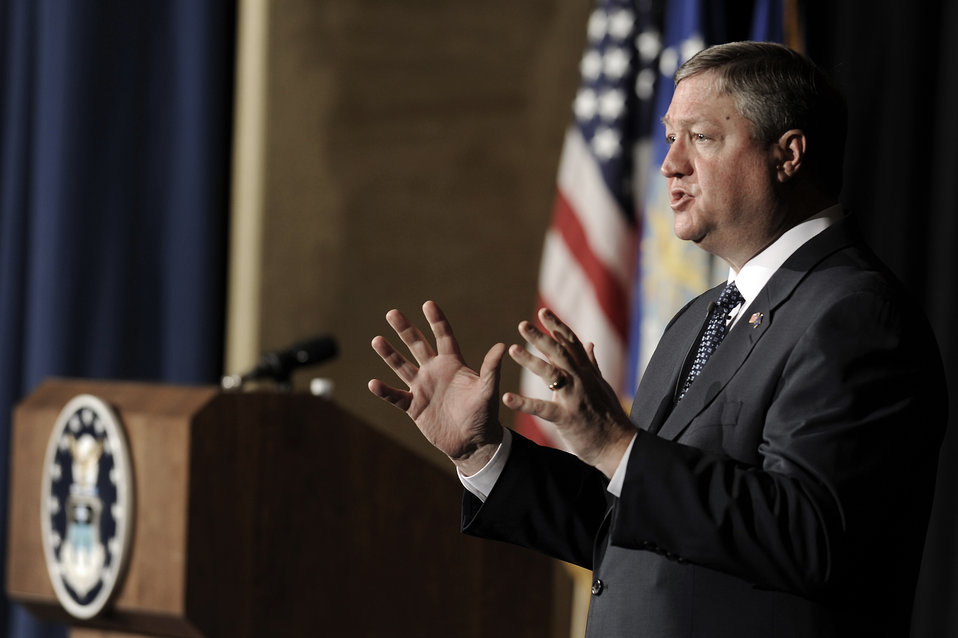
'Visions of Valor' portraits honor heroes

Secretary of the Air Force Michael B. Donley briefs the U.S. Air Force Academy cadet wing during a cadet call held at Arnold Hall April 3 at the Academy in Colorado. The secretary talked with the cadets about leadership and reminded them of the strength diversity brings to the total force.